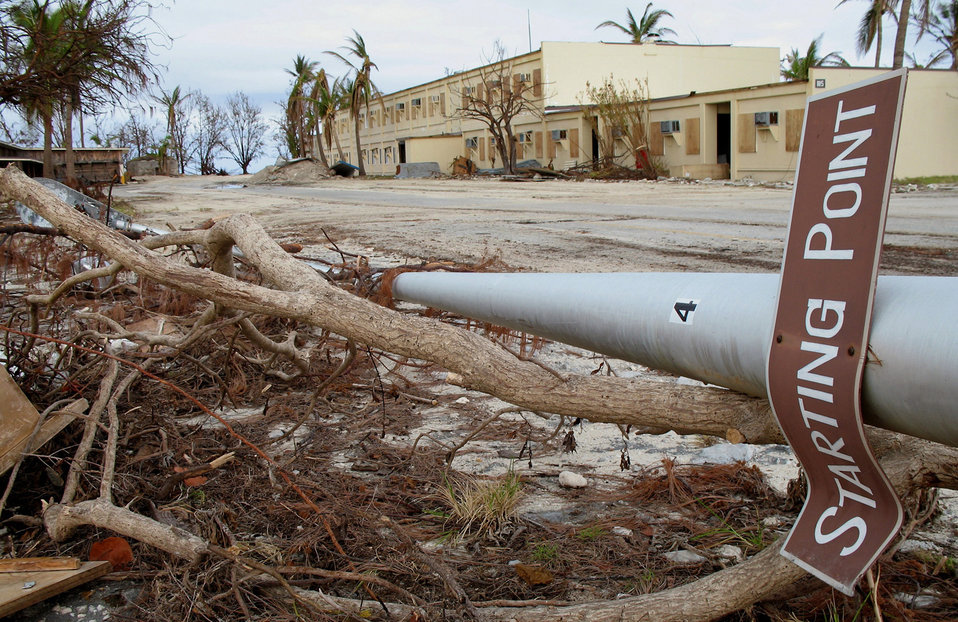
Airmen add up damage at Wake Island

Debris and wreckage line the streets of Wake Island Sept. 14. Super Typhoon Ioke swept through Aug. 31 with wind speeds of 155 mph and gusts at 190 mph. A team of civil engineers and communications experts deployed to the atoll from Hickam Air Force Base, Hawaii, to estimate the extent of the damage left by the Category 5 storm.